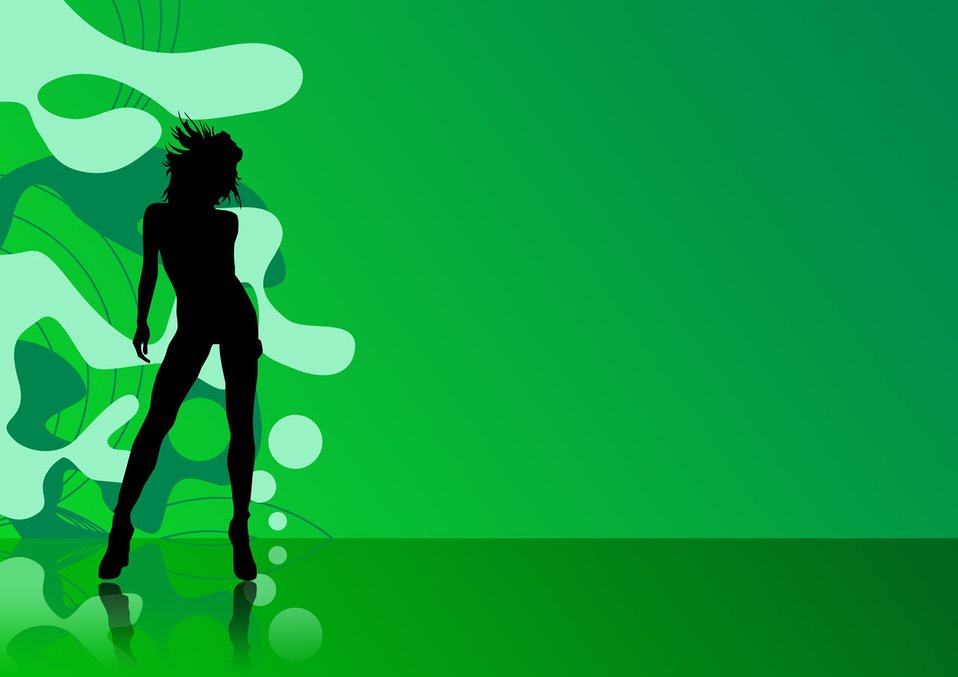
Green silhouette

Retro green silhouette - our best selling image on fotolia so far.